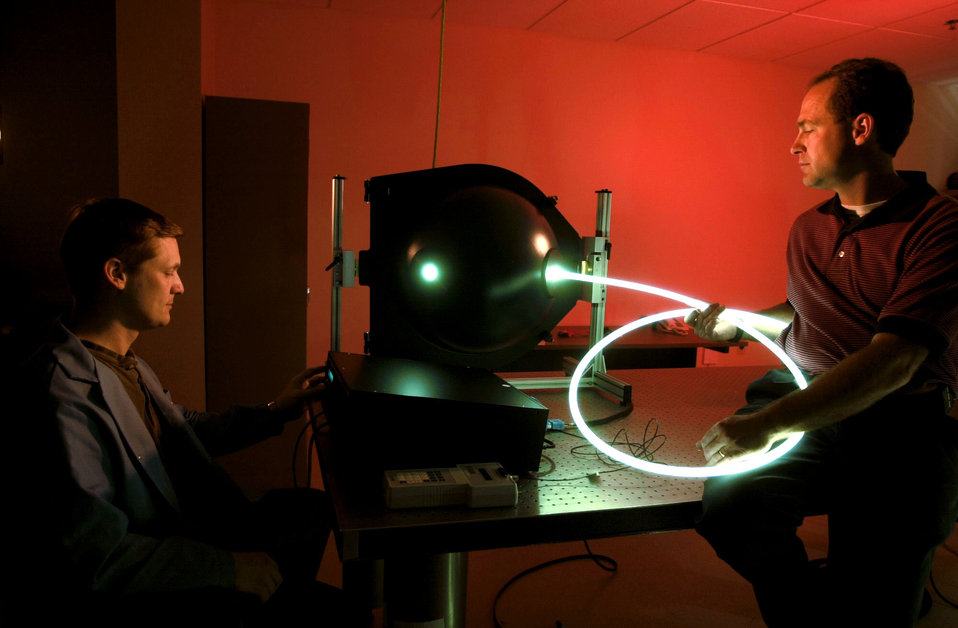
Hybrid lighting technology ORNL

01-126-a DOE photo by Lynn Freeny
Hybrid lighting technology Oak Ridge National Lab. Oak Ridge Tennessee 2001